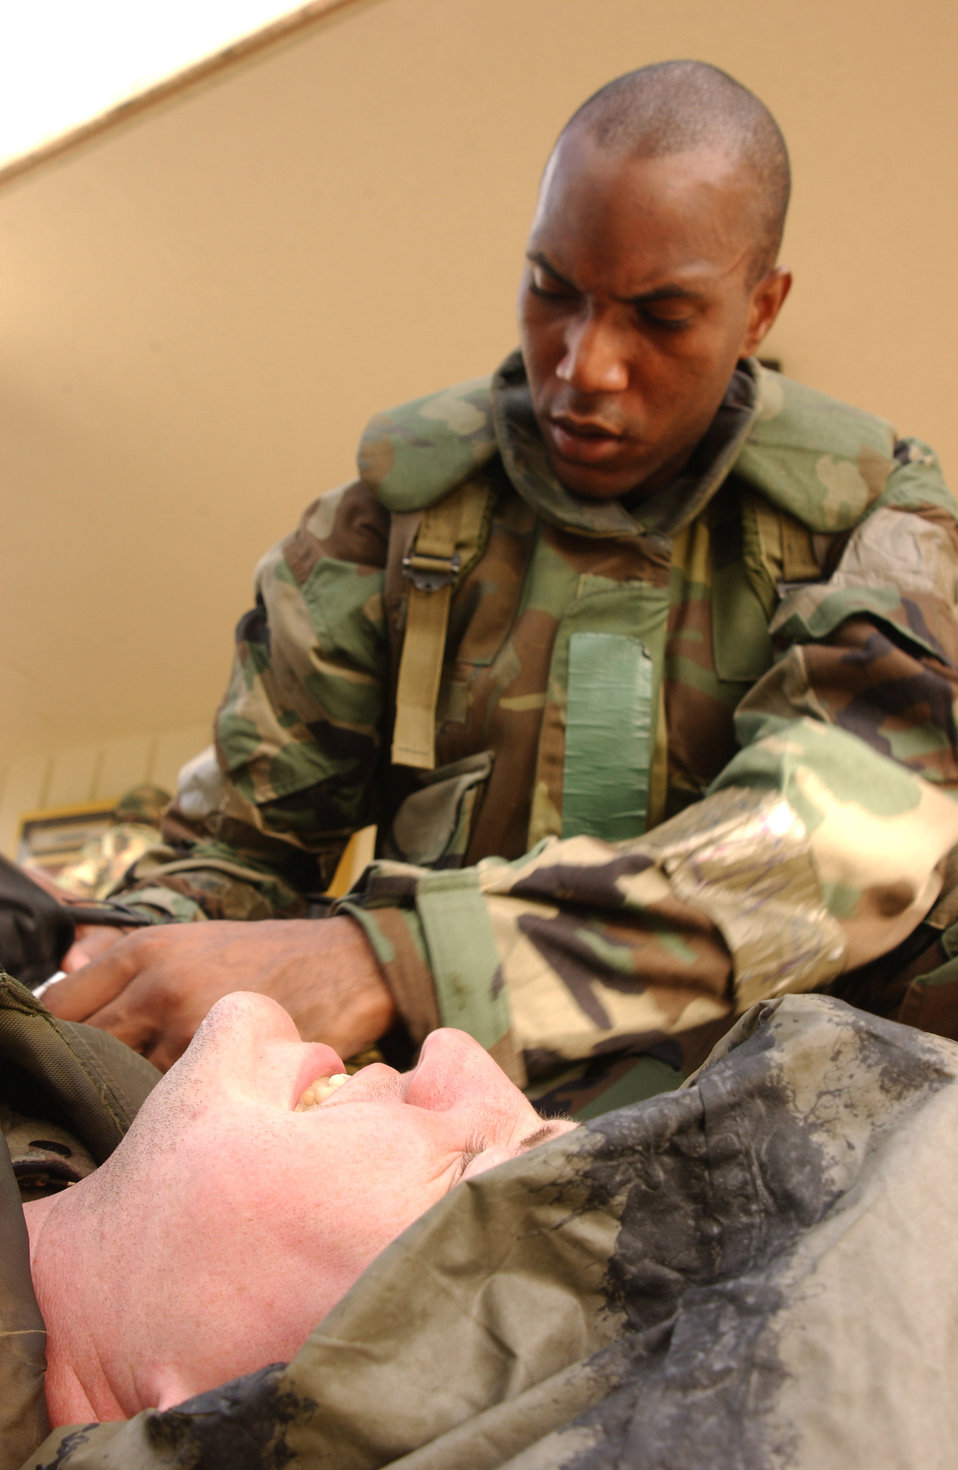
Beverly High 06-3

Airmen 1st Class Brian Miles performs self aid and buddy care on a simulated injured Senior Airman Jeremy McGuffin at Kadena Air Base, Japan, Sept. 13. Kadena Airmen are participating in a week-long operational readiness exercise that tests the warfighting capabilities of the base Airmen.